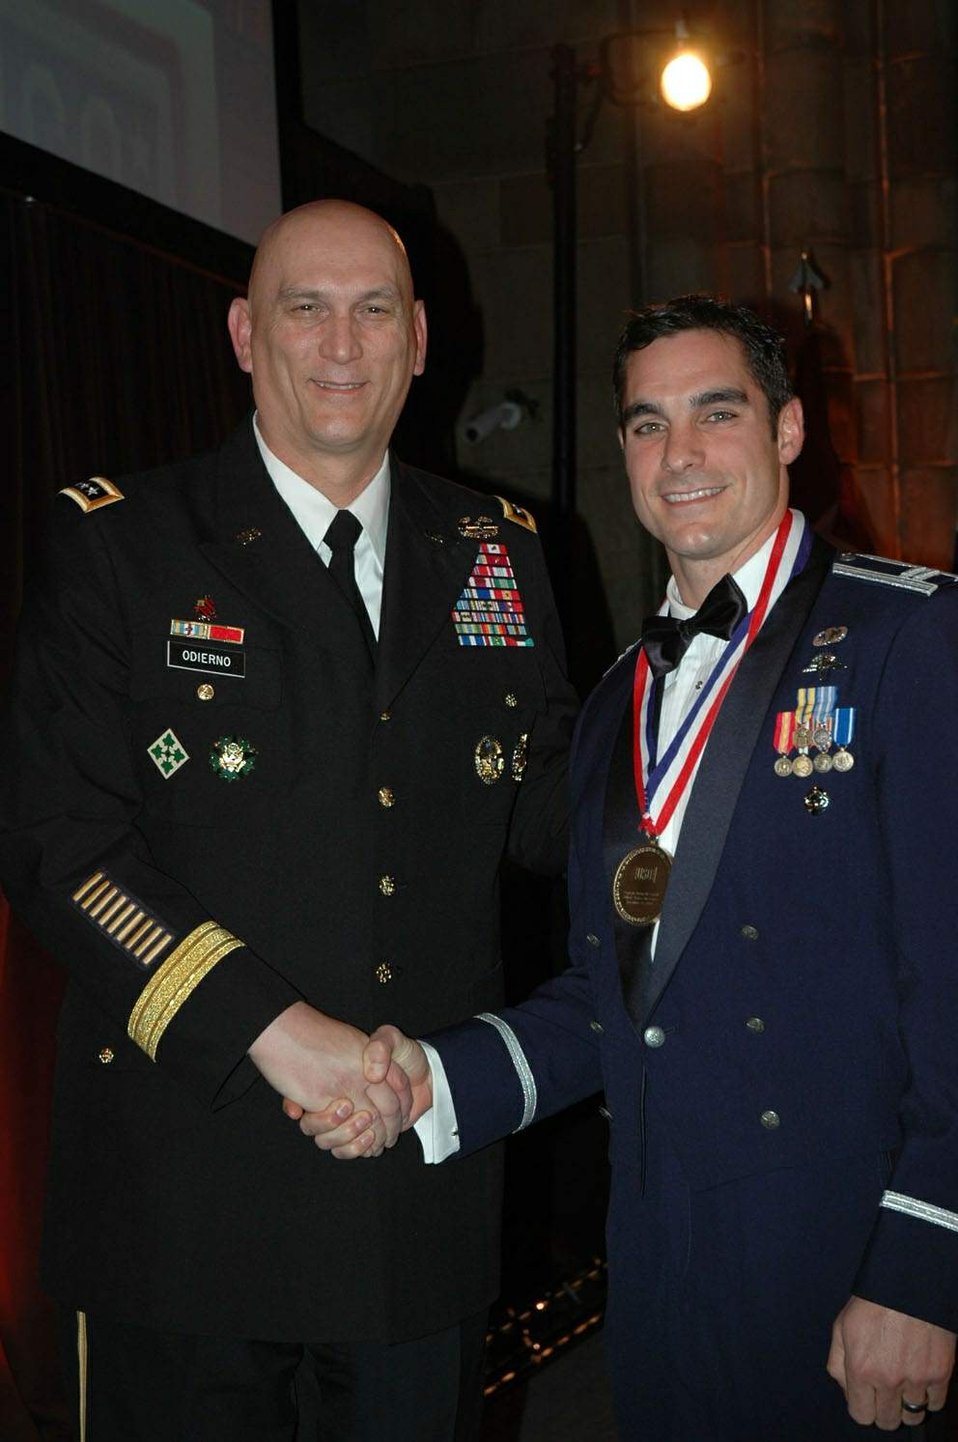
USO officials honor 5 Air Force Medal of Honor recipients

Army Gen. Raymond T. Odierno presents the George Van Cleave Leadership award to Capt. Justin Conelli at the USO of Metropolitan New York's 48th Annual Armed Forces Gala and Gold Medal Dinner Dec. 9, 2009 in New York City. General Odierno is the top U.S. commander in Iraq, and was awarded the USO's Distinguished Service Award. Captain Conelli is assigned to Air Force Special Operations Command's 21st Special Tactics Squadron at Pope Air Force Base, N.C.